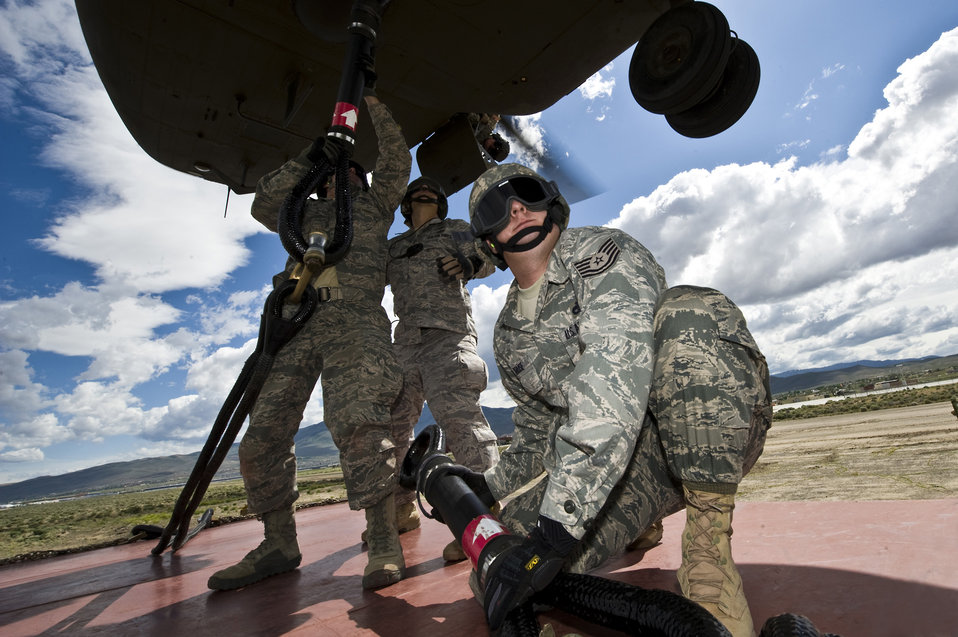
Airdrop and sling-load training

Tech. Sgt. Chris Kruze (foreground) stands by while Staff Sgt. Troy Hollis and Staff Sgt. Jeremy Lowe attach a storage container to a Nevada Army National Guard CH-47 Chinook helicopter June 28, 2011, during airdrop and sling-load training at the Senator Harry Reid Readiness and Training Center near Stead, Nev. Kruze and Lowe are airborne vehicle equipment craftsmen. Hollis is an airborne vehicle maintenance journeyman. All three NCOs are assigned to the 820th RED HORSE Squadron.